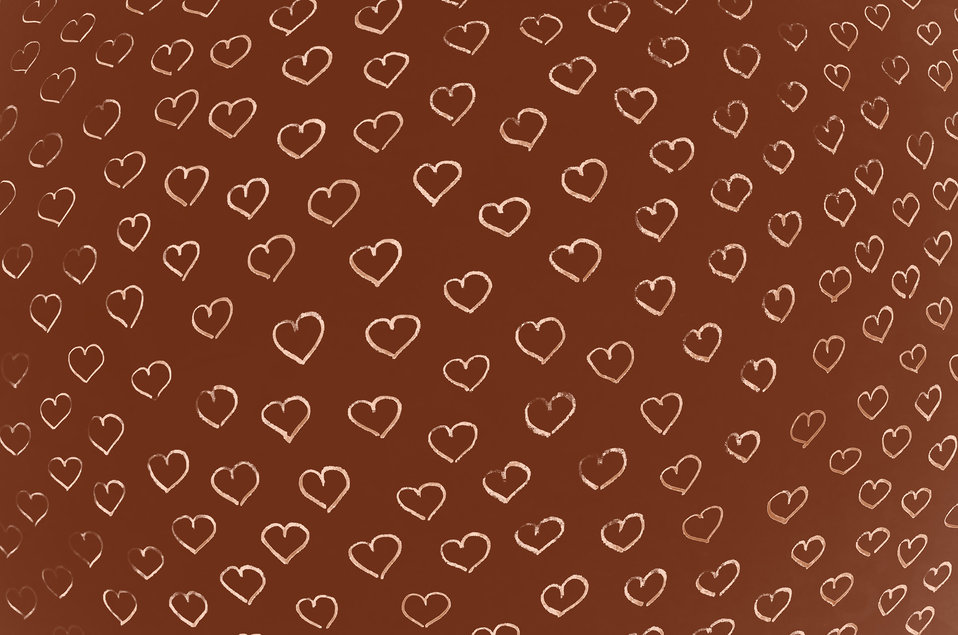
Heart - background.